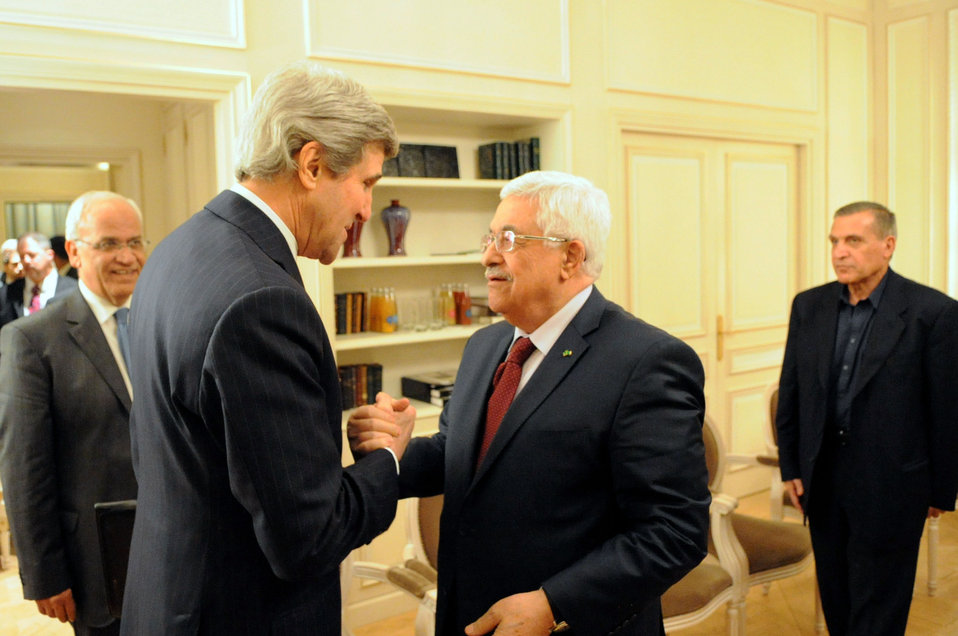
Secretary Kerry and Palestinian Authority President Abbas Shake Hands Before Meeting in Paris

U.S. Secretary of State John Kerry and Palestinian Authority President Mahmoud Abbas shake hands before a meeting in Paris, France, on February 19, 2014.